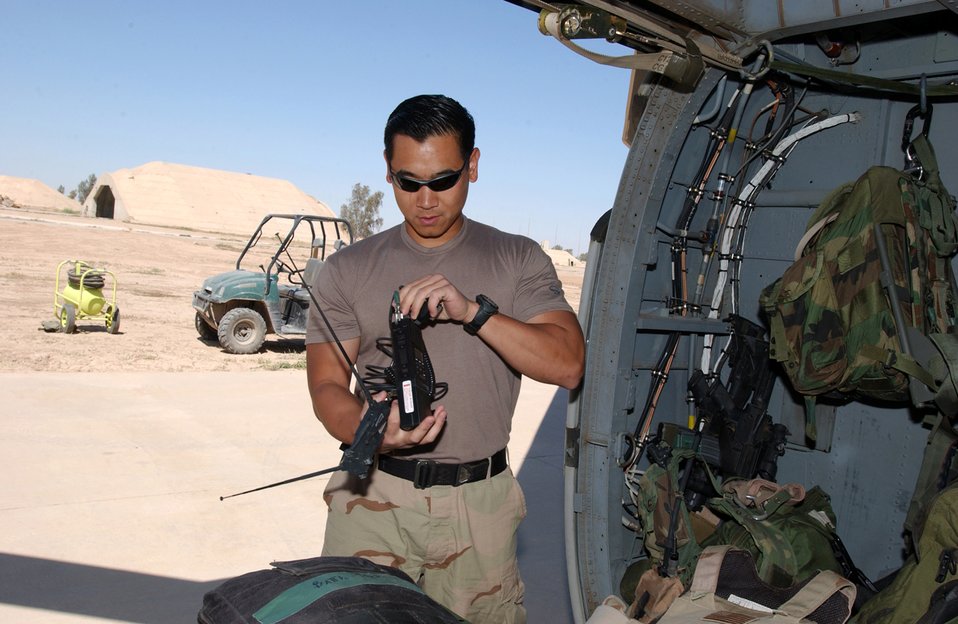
Combat rescue

BALAD AIR BASE, Iraq -- Senior Airman Ed Ha checks a communications antenna ensuring his equipment is mission ready. Airman Ha is a pararescueman with the 64th Expeditionary Rescue Squadron here, and he is deployed from the 38th Rescue Squadron at Moody Air Force Base, Ga.